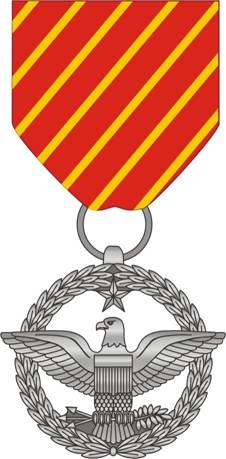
First Air Force Combat Action Medals to be presented

Gen. T. Michael Moseley, the Air Force chief of staff, is scheduled to present the Air Force Combat Action Medal for the first time to six Airmen during an 8 a.m. ceremony June 12 at the Air Force Memorial in Arlington, Va. The Air Force Combat Action Medal was designed by Susan Gamble, an artist and master designer for the U.S. Mint, in conjunction with the Army Institute of Heraldry. The design of the new medal was inspired by a personal insignia Brig. Gen. William